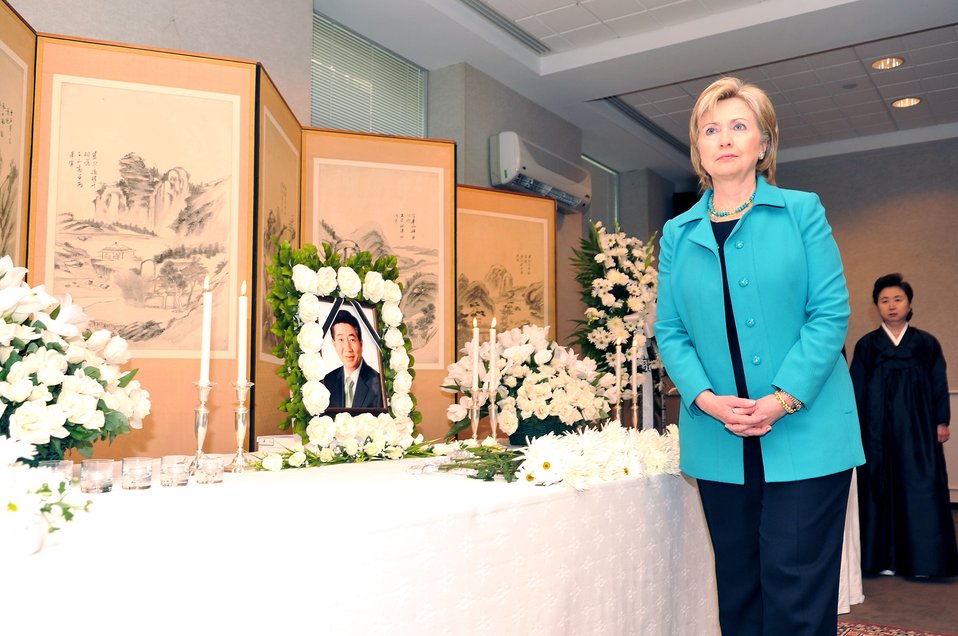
Secretary Clinton Signs Condolence Book for Former South Korean President Roh

U.S. Secretary of State HIllary Rodham Clinton signs the condolence book for former South Korean President Roh at the Republic of Korea Embassy in Washington, DC May 28, 2009.